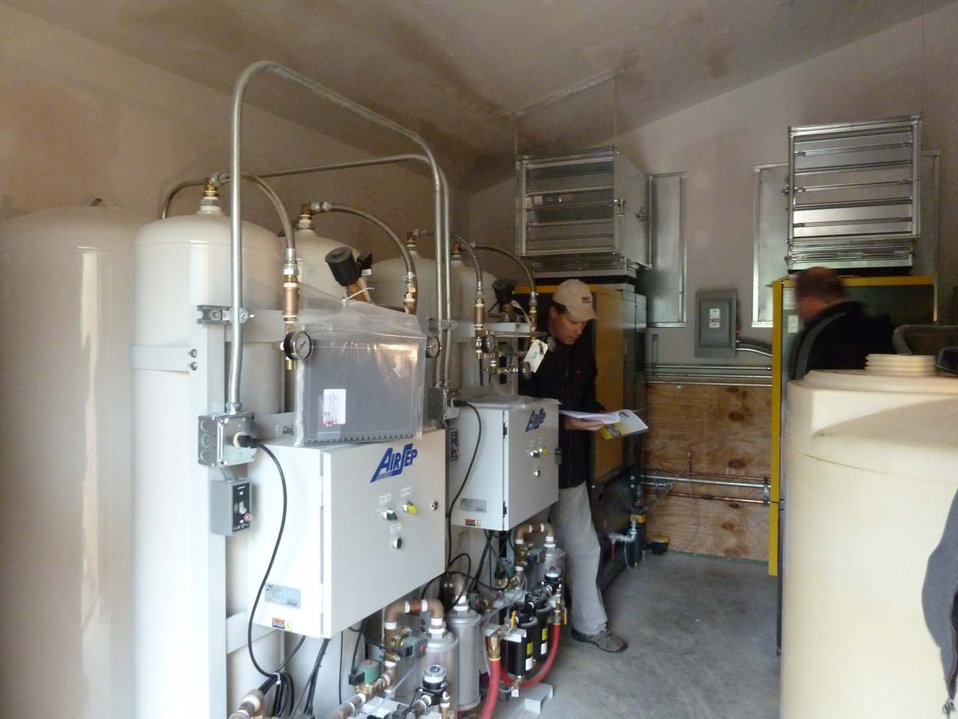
Water oxygenating system

Water is injected with oxygen from a new oxygen generation system to enhance water quality before being used in the facility.